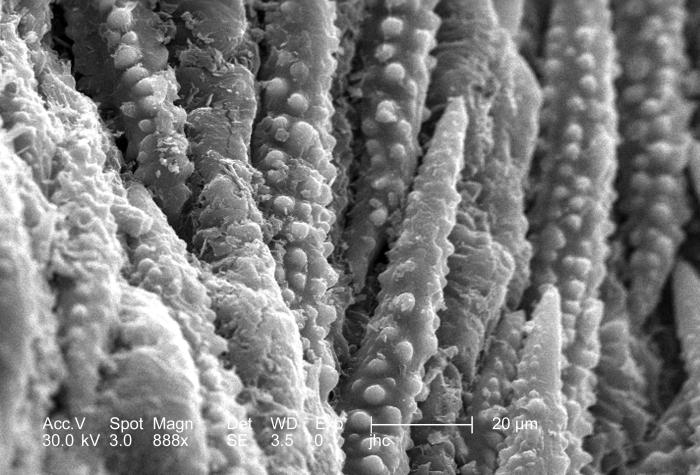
Under a moderately high magnification of 888x, this scanning electron micrograph (SEM) revealed some of the morphologic ultrastructural surface details of one of the very small flower buds clustered in the center of a white dogwood flower, Cornus florida. Due to the extremely small size of the centrally located clustered flowers, the larger colored "bracts" which are actually modified leaves that protect the flowers themselves, are also mistaken for flower petals.